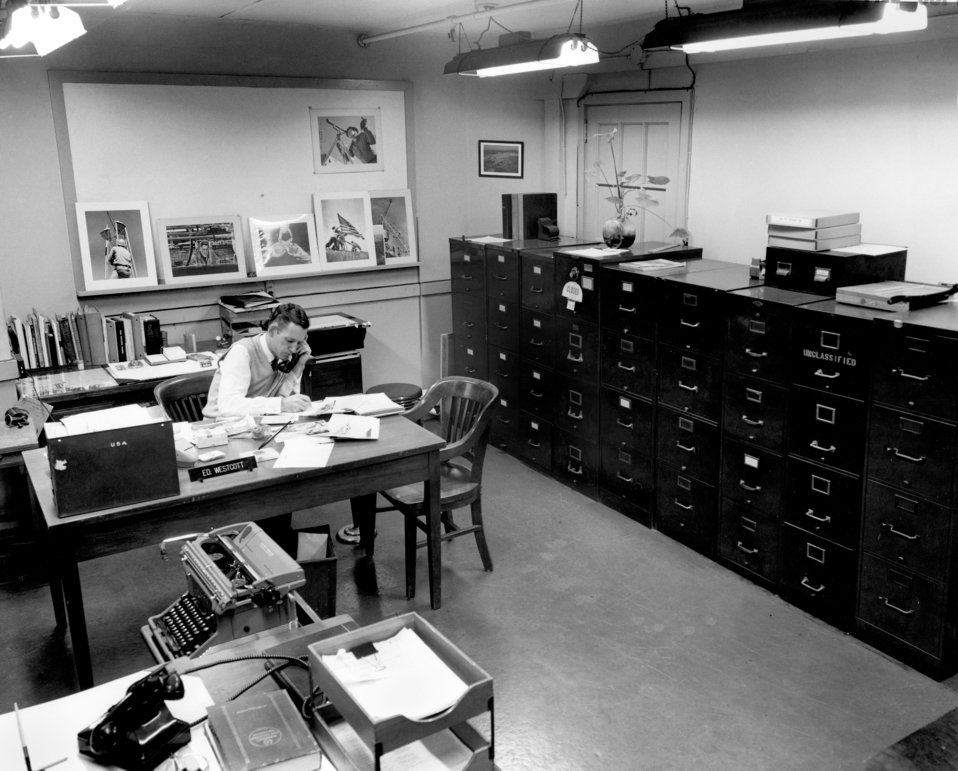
Ed Westcott in His Office Oak Ridge 1957

57-0001 DOE photo W.E. Hall 1-4-1957 Oak Ridge Tennessee